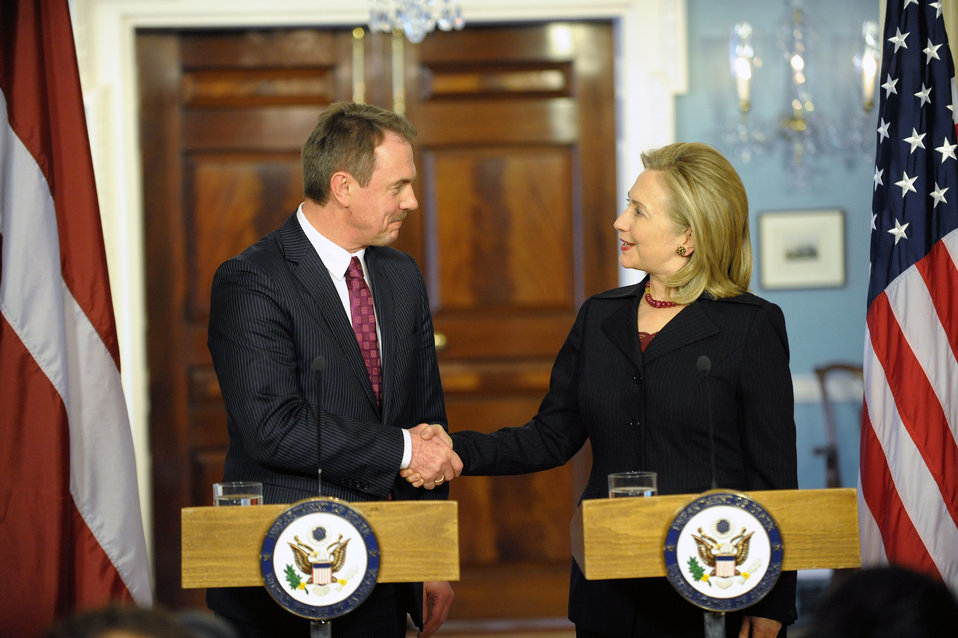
Secretary Clinton Shakes Hands With Latvian Foreign Minister Kristovskis

U.S. Secretary of State Hillary Rodham Clinton shakes hands with Latvian Foreign Minister Girts Valdis Kristovskis at the U.S. Department of State in Washington, D.C., on February 22, 2011.